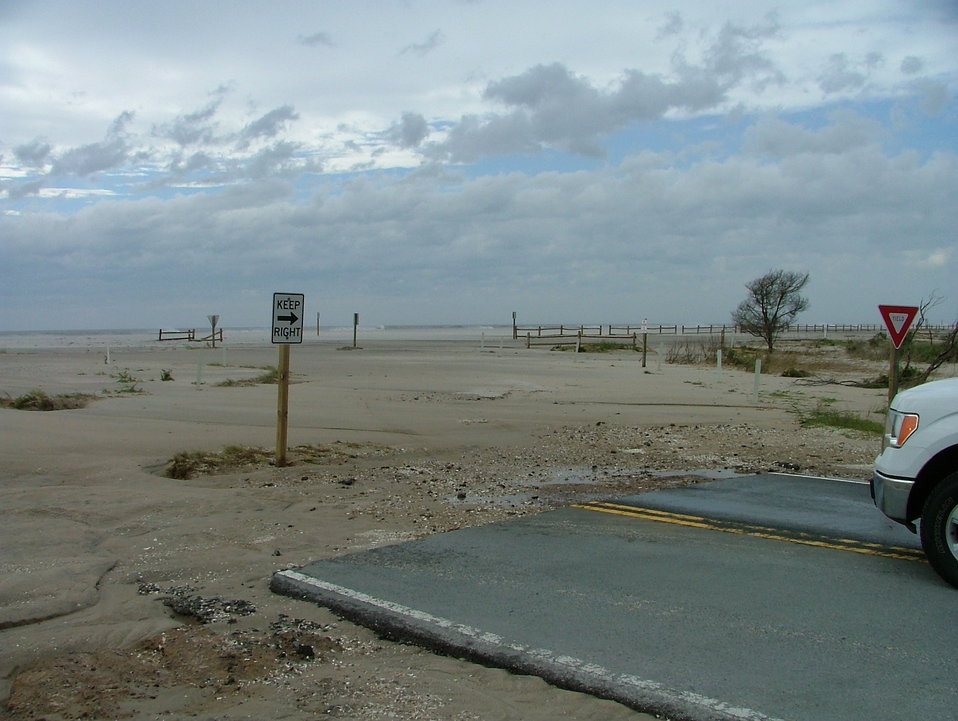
Damage to parking lots

The end of Beach Road and the damage caused to parking lots at Chincoteague National Wildlife Refuge in Virginia from Hurricane Irene.